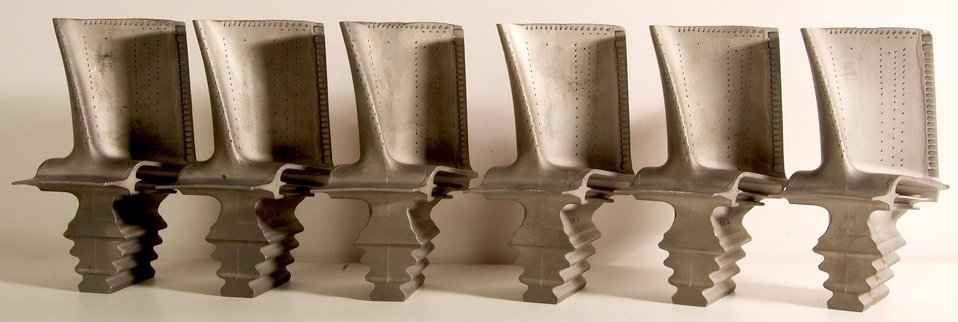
AMES LAB'S NEW BOND COAT FOR THERMAL BARRIER COATING SYSTEMS (TBCS) WILL ALLOW HIGHER OPERATING EFFICIENCIES FOR GAS TURBINE BLADES IN AIRCRAFT ENGINES.

THE TBCS COULD PROVIDE IMPROVED RELIABILITY AND DURABILITY OF TURBINE BLADES, MAKING POSSIBLE HIGHER OPERATING EFFICIENCIES AND EXTENDING ENGINE LIFETIMES. AMES WON A 2005 R&D 100 AWARD. THE R&D 100 AWARDS ARE INDUSTRY-WIDE COMPETITION REWARDING THE PRACTICAL APPLICATIONS OF SCIENCE.